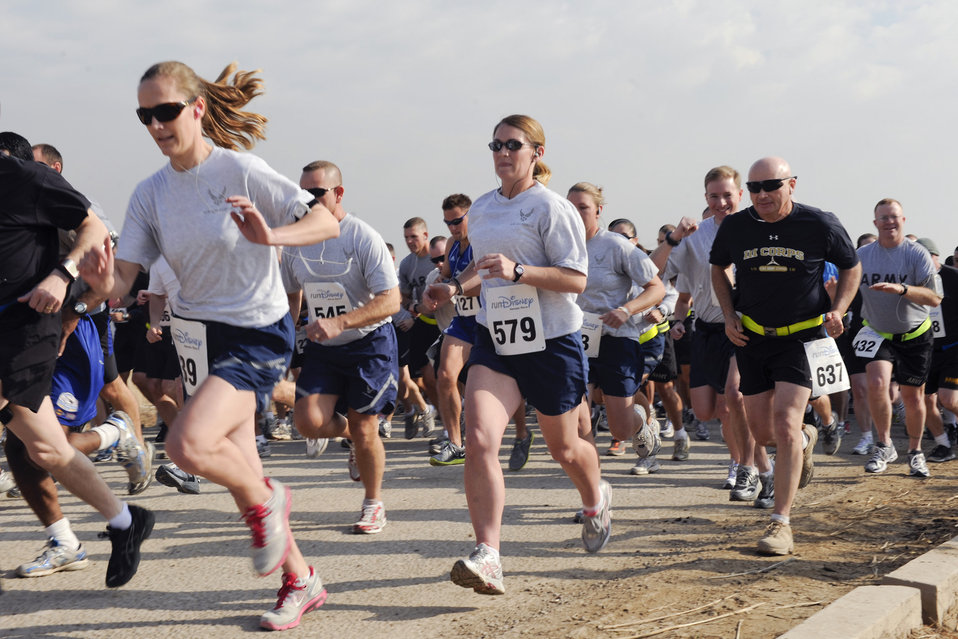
Disney Half Marathon

Members from all branches of the U.S. military and from several different countries' militaries participate in the Disney Heroes Race Jan. 8, 2011, in Baghdad. The 13.1 mile race mirrored the Disney Half Marathon and also included a live video stream to the stateside event.